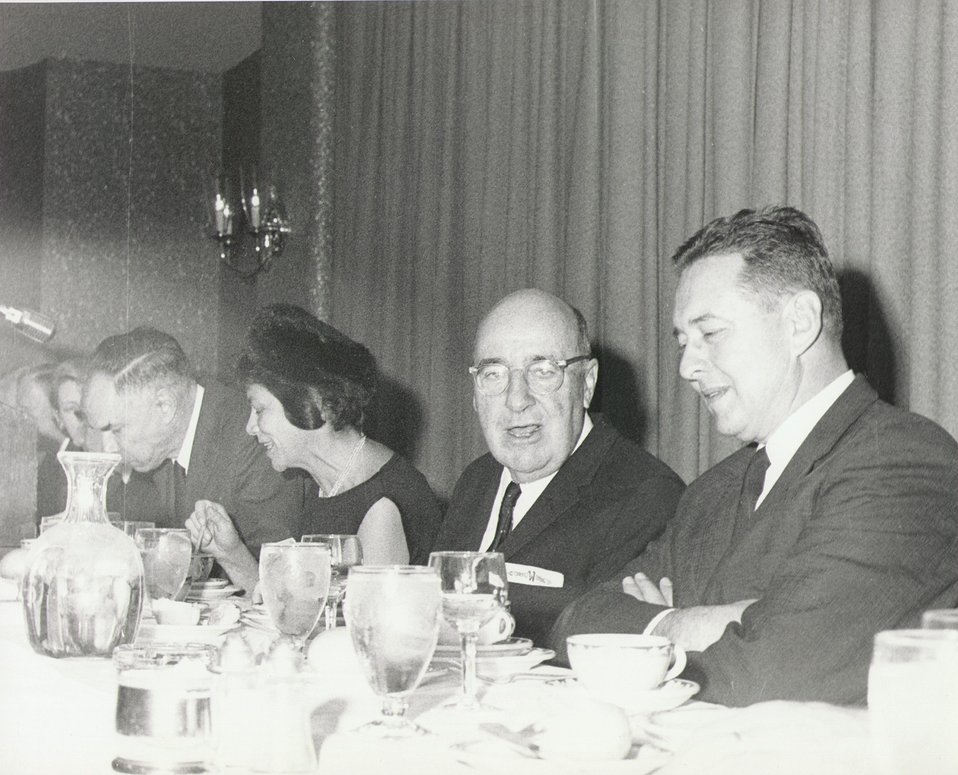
Fermi Award Ceremony for Teller in 1962.